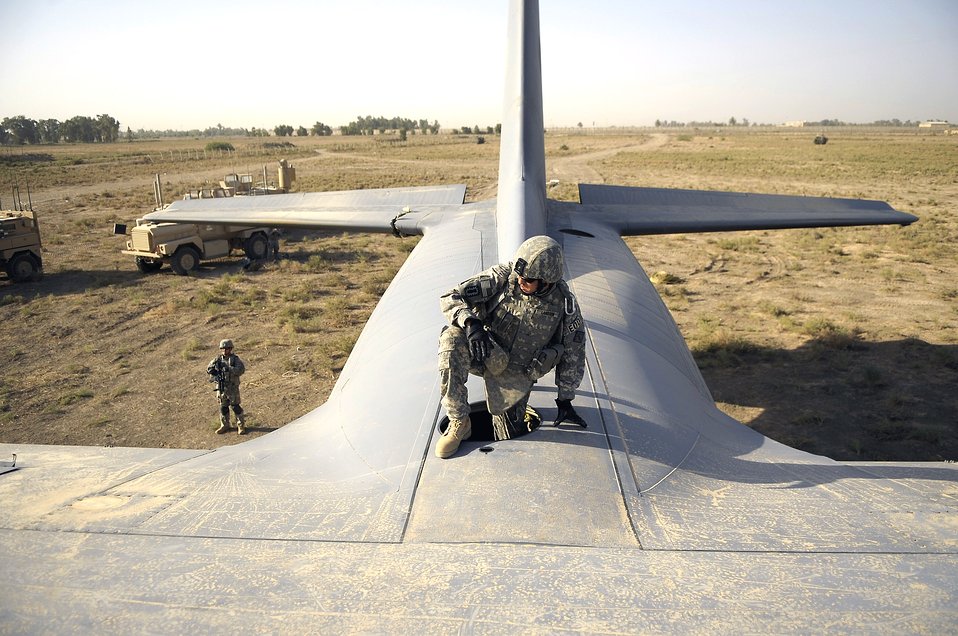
Operation Iraqi freedom

Staff Sgt. Joshua Langdon from the 447th Air Expeditionary Group's Explosive Ordinance Disposal team climbs through the top hatch of a C-130 Hercules aircraft before placing explosive charges around the wings of the plane in Baghdad, Iraq, July 7. The team is using a series of controlled detonations designed to divide the airplane into smaller pieces so it can be moved. The C-130 made an emergency landing in a field north of the Baghdad International Airport shortly after take-off on June 27.